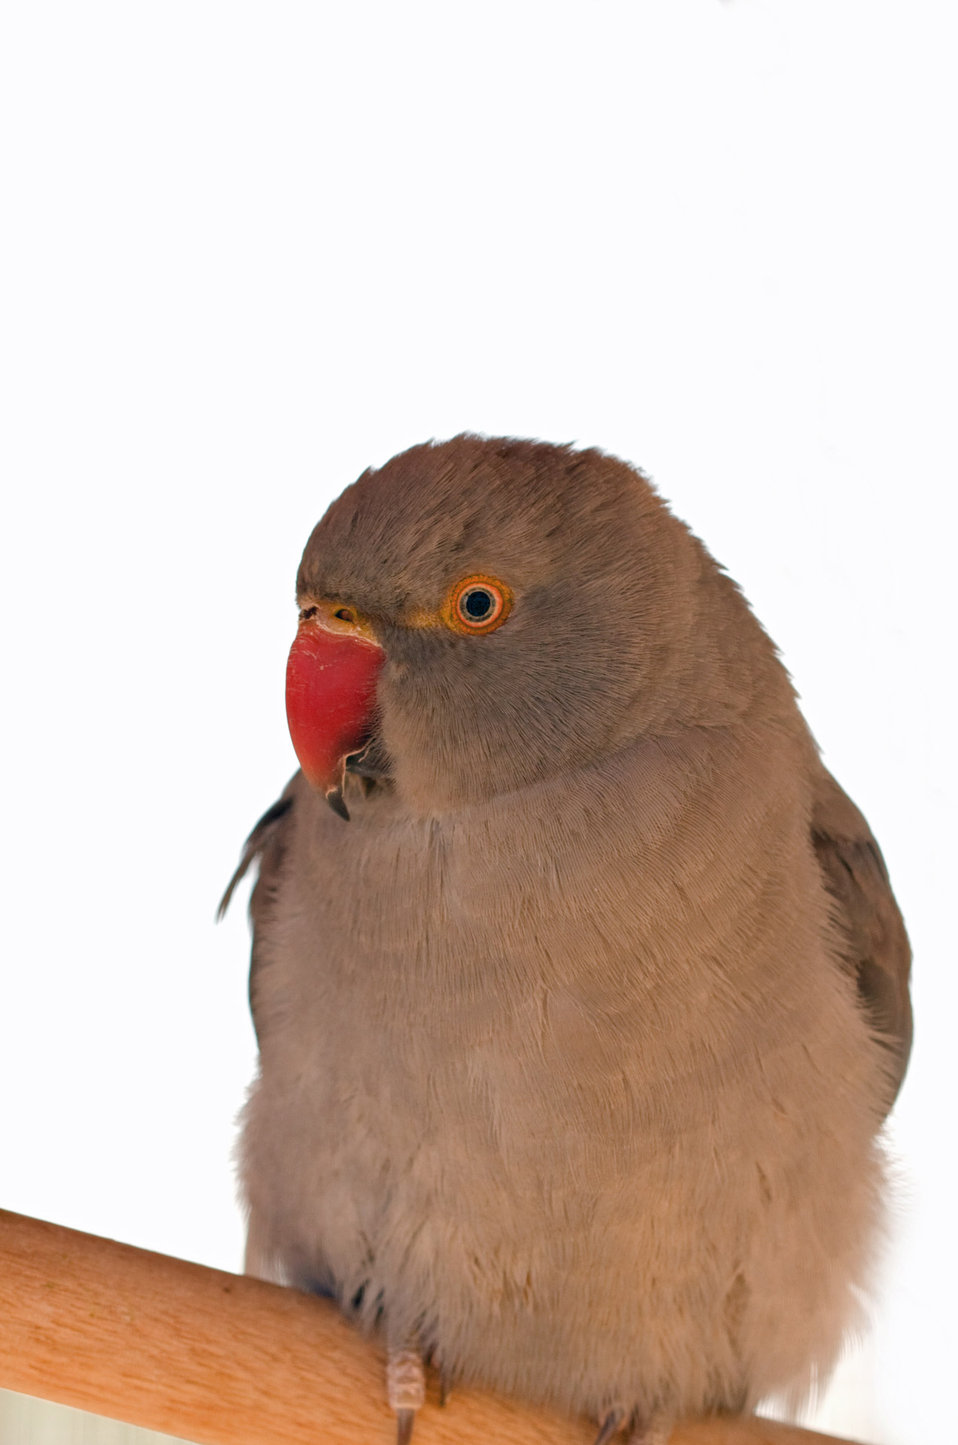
Parrot bird isolated

Cute gray baby parrot bird isolated on white background.